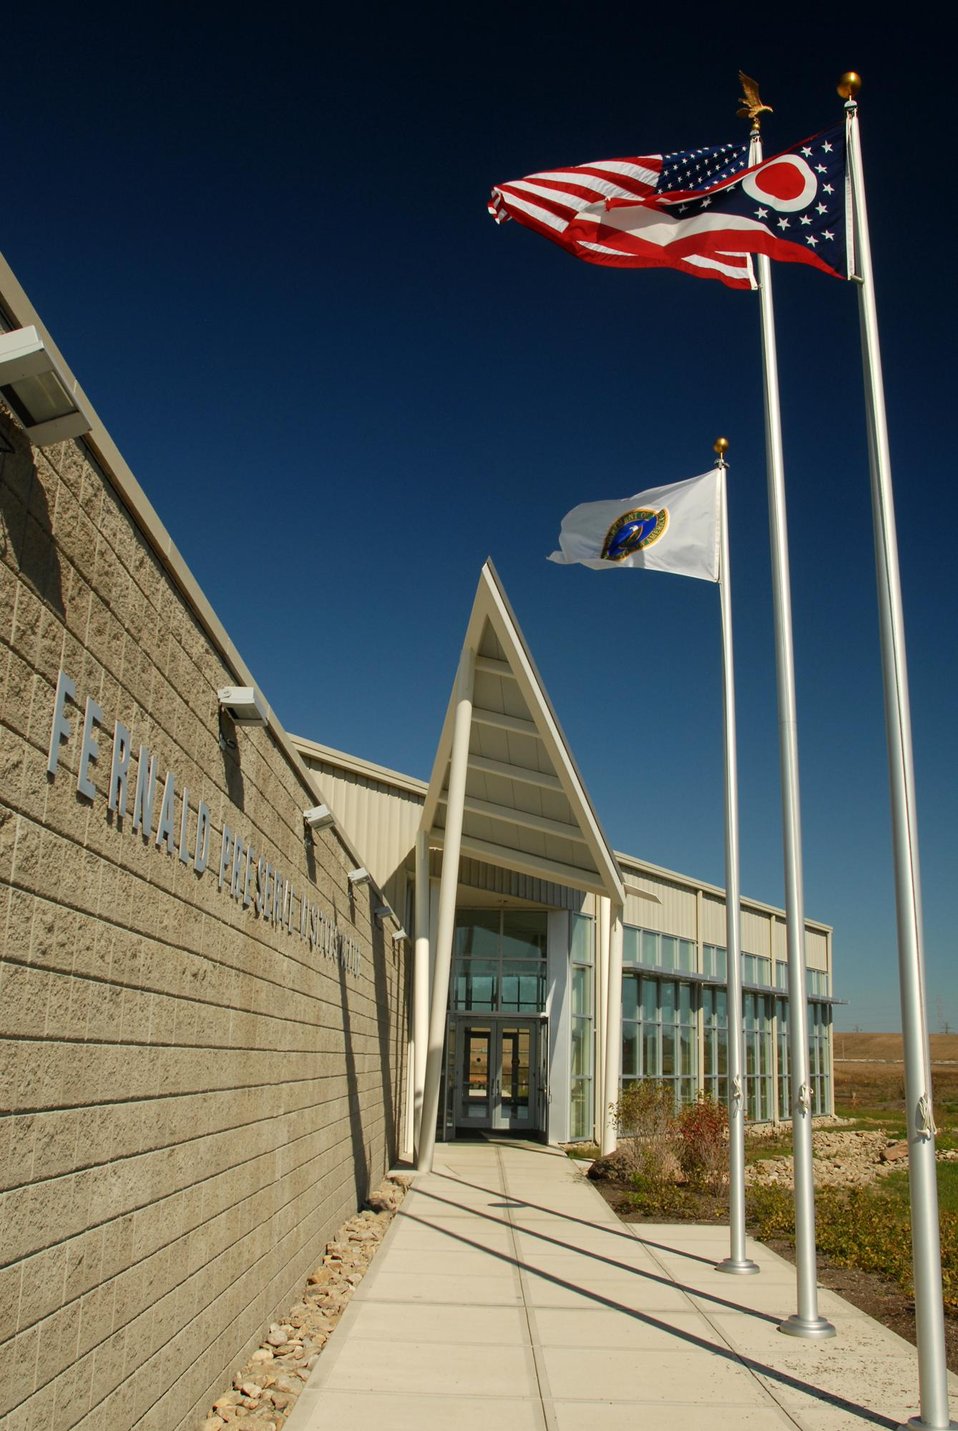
Fernald Preserve Visitor Center.

The Fernald Preserve Visitor Center is a 10,000 square foot green building that celebrates the rich and varied history of the Fernald Site. Information on the site's natural, Native American, settlement and farming, uranium production, and environmental cleanup eras, as well as the recent ecological restoration and legacy management mission, is presented through a series of exhibits. The U.S. Green Building Council awarded the center platinum level certification through its Leadership in Energy and Environmental Design (LEED) program.